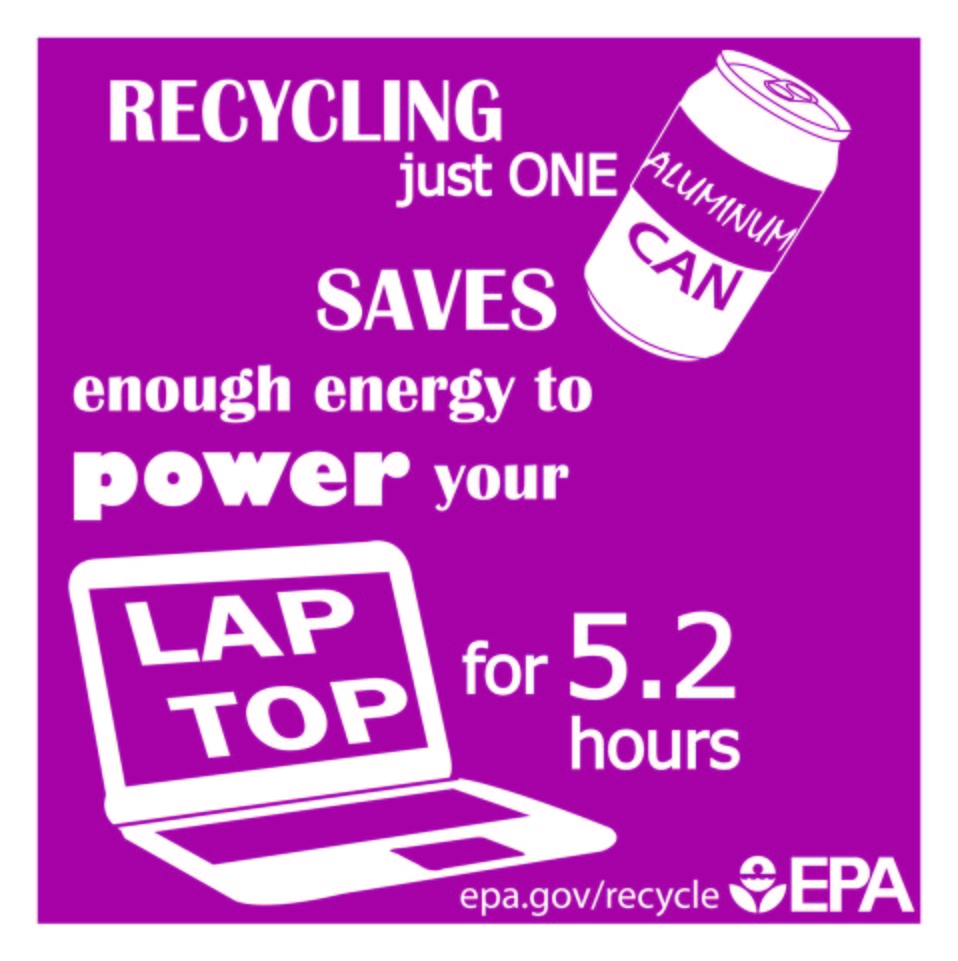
Recycle

Recycling helps you, your community, and the environment by saving money, energy, and natural resources.